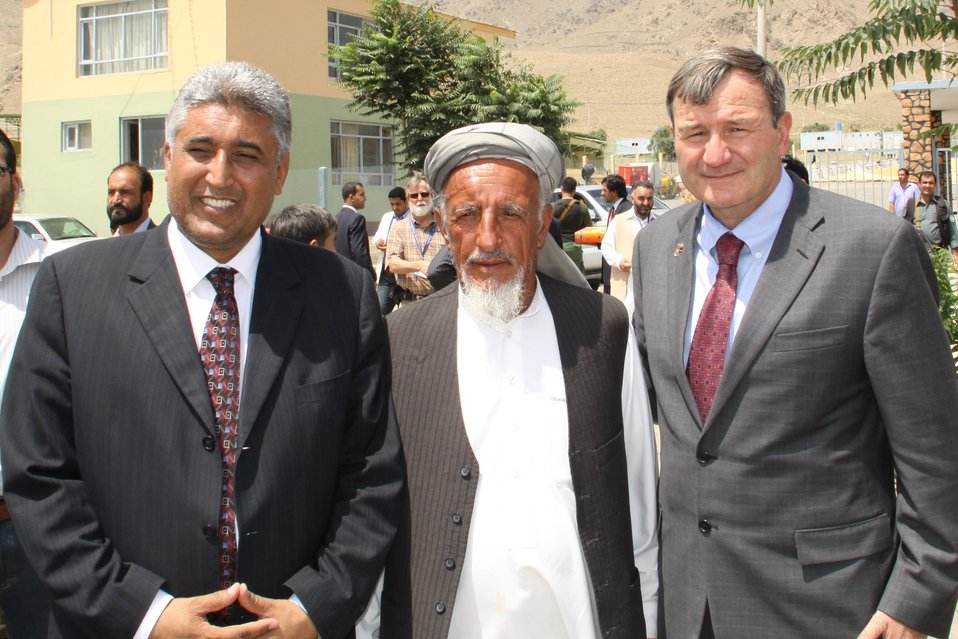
Badam Bagh Farm